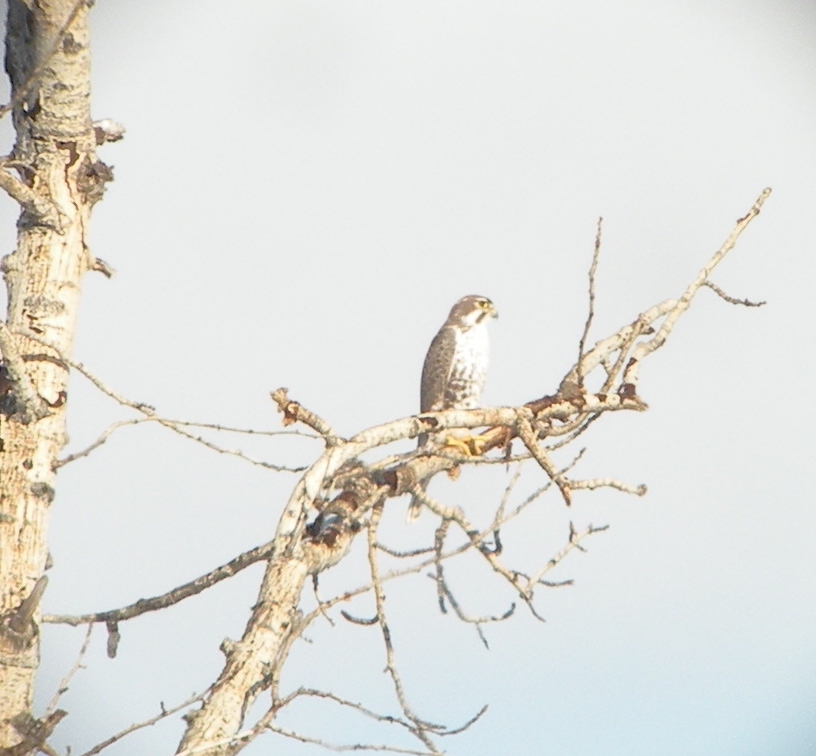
Prairie Falcon

Perched a mere 75 yards from the back door of the Lee Metcalf National Wildlife Refuge office, this prairie falcon was photographed using the digiscope method.